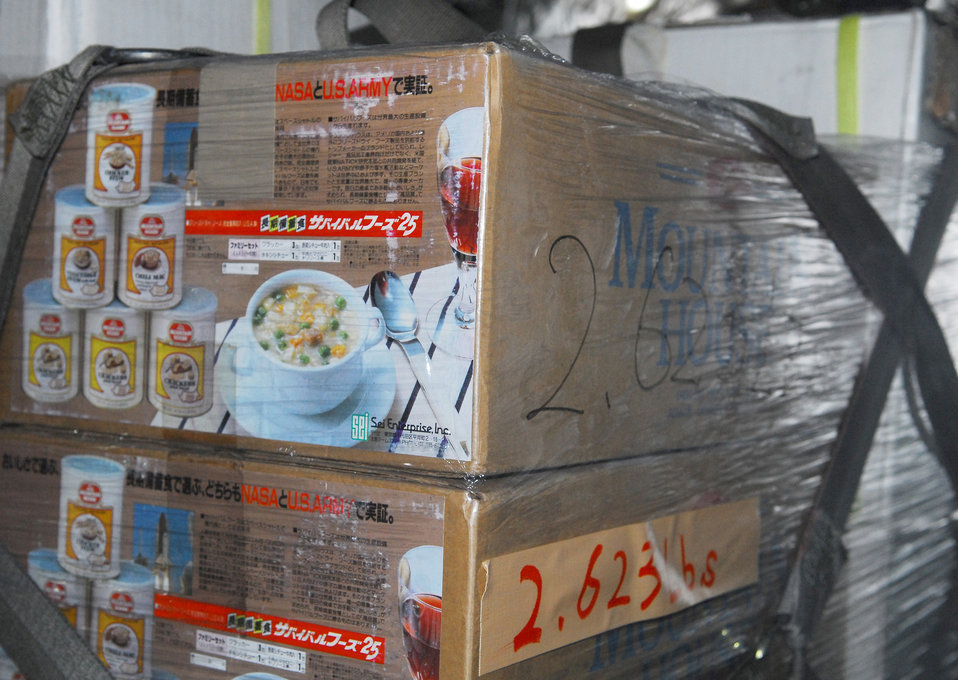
Delivering relief supplies

More than 11,000 pounds of food, water and blankets are loaded onto a C-130 Hercules March 29, 2011, at Chitose Air Base, Japan. The supplies are bound for Matsushima Air Base, Japan.